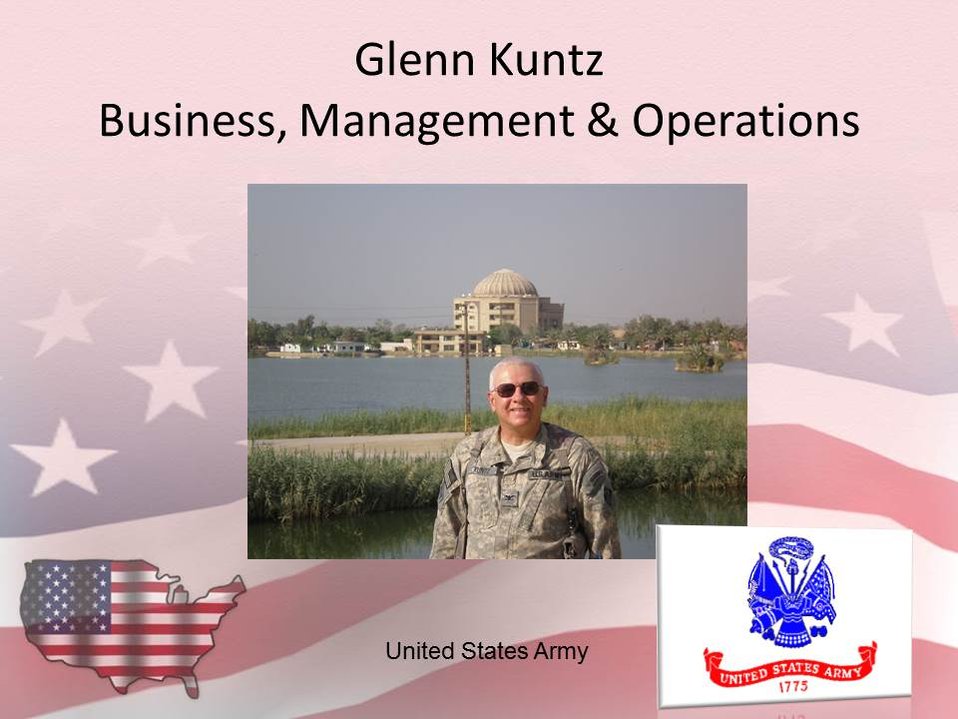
Glenn Kuntz